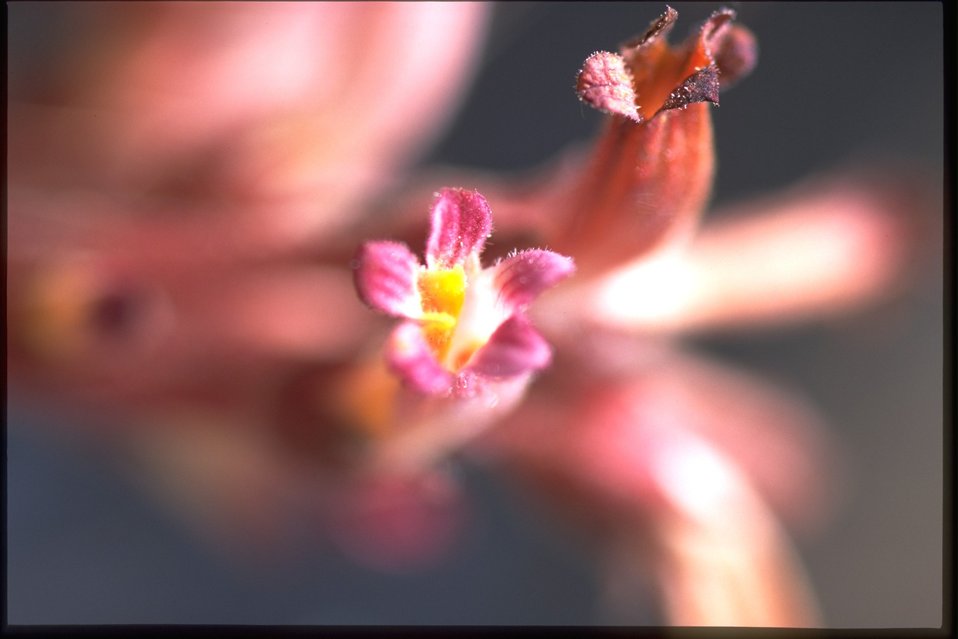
Closeup shot of Orobanche.